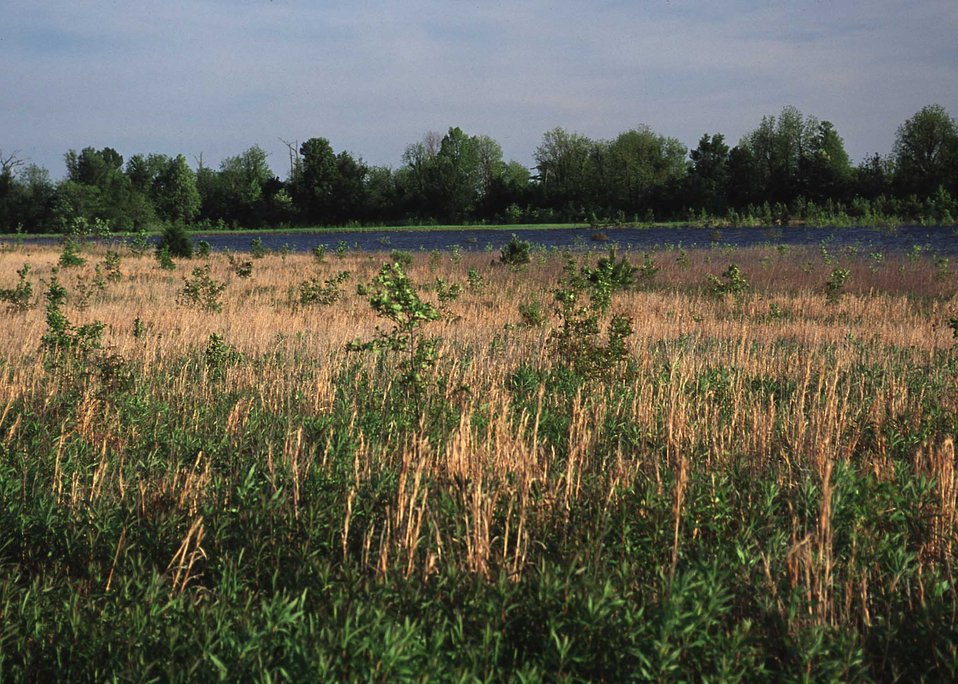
Hardwood trees planted as part of a bottomland hardwood wetlands restoration project in central Mississippi.